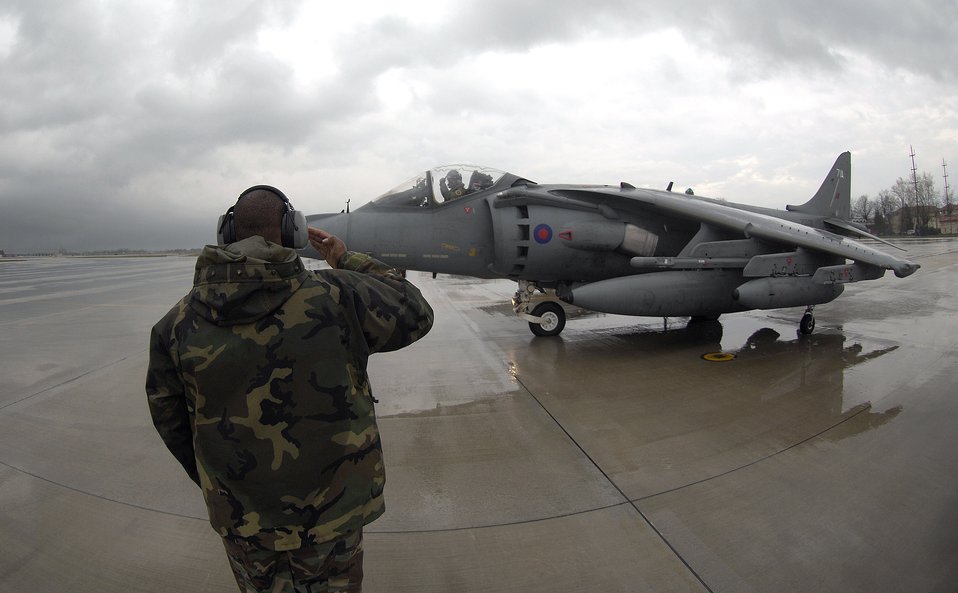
Making a pit stop

Staff Sgt. Vincent Metcalf salutes a departing Royal Air Force AV-8 Harrier March 19 at Aviano Air Base, Italy. The Harrier had stopped at Aviano to refuel. Sergeant Metcalf is with the 31st Maintenance Squadron there.